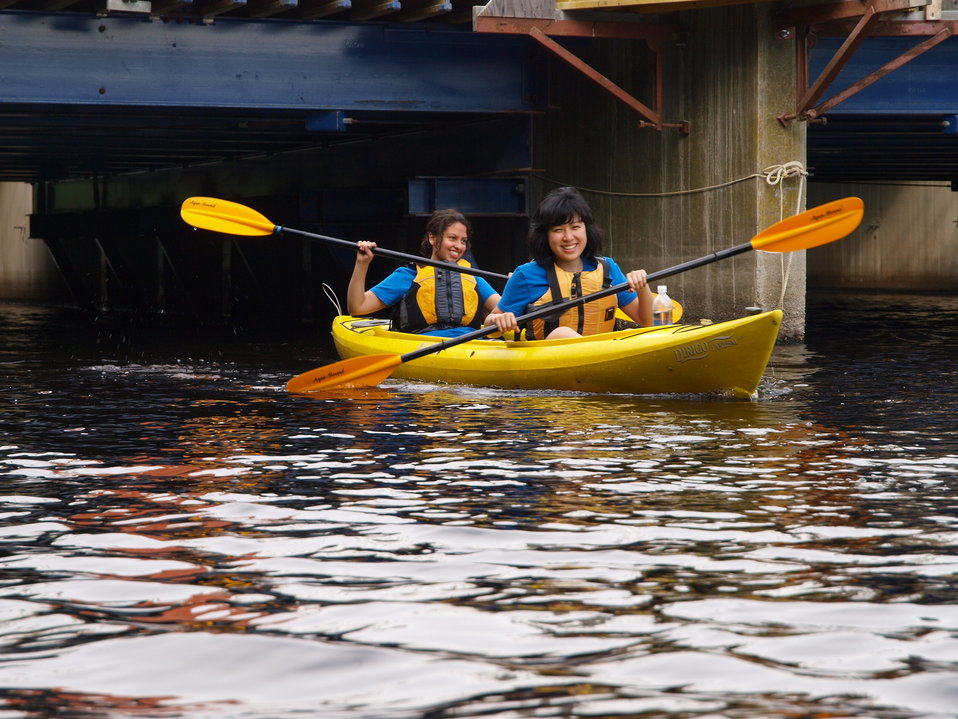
Kayaking

Emily and Sofia making their way along the Charles River in their kayak.